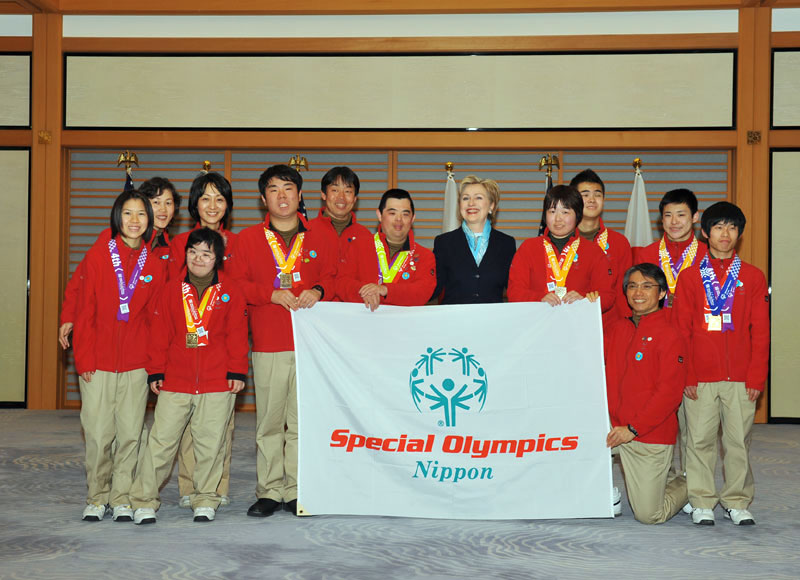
Secretary Clinton With Japan's Special Olympics Team

U.S. Secretary of State Hillary Clinton shares a group photo with Japan's Special Olympics team at Haneda Airport in Tokyo, Japan February 16, 2009.